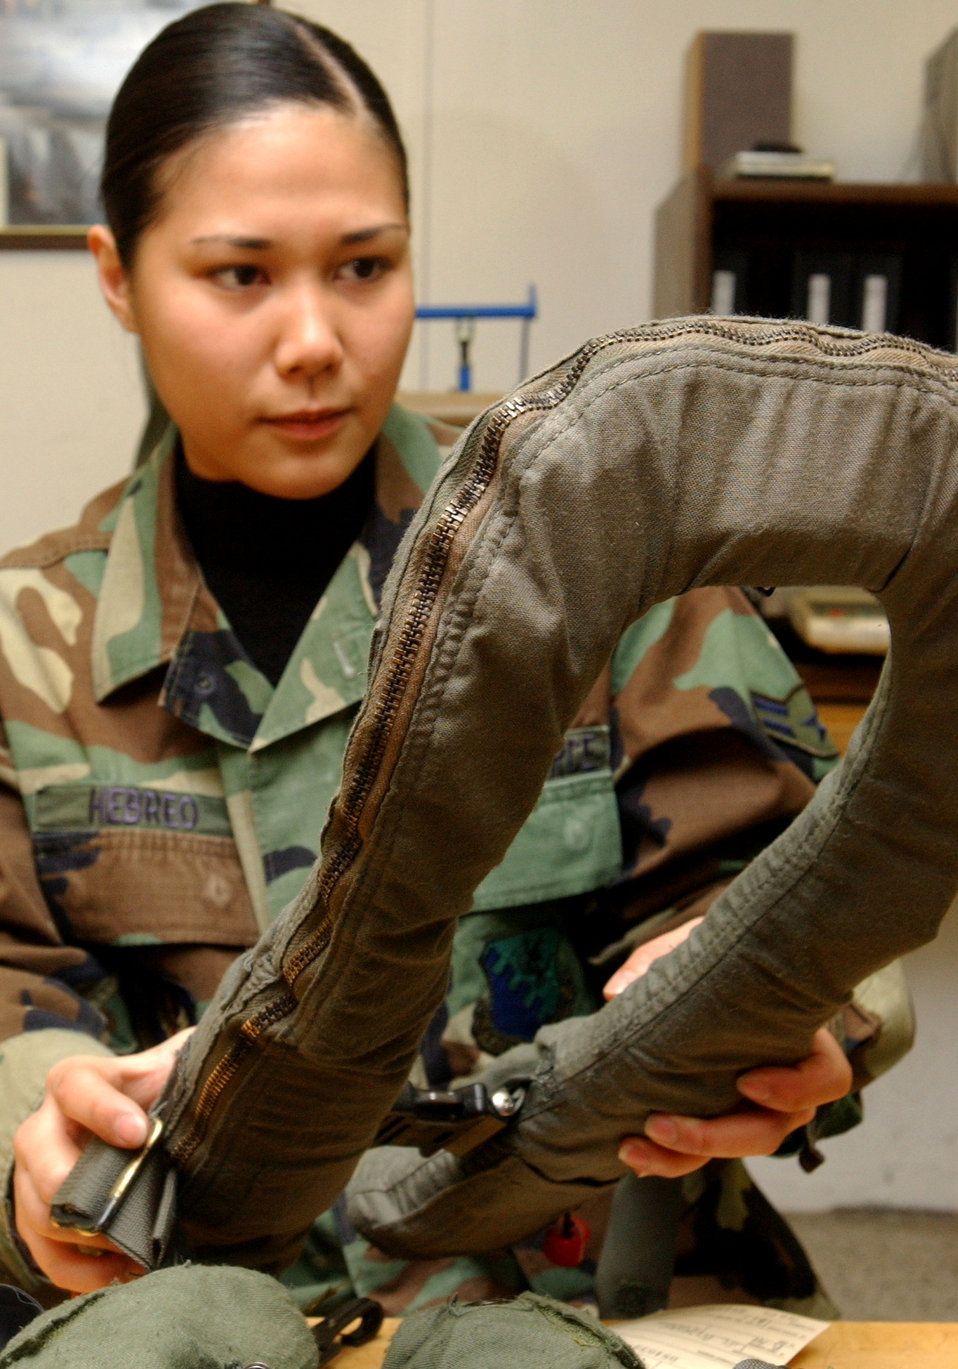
Perserver Inspection

AVIANO AIR BASE, Italy -- Airman 1st Class Marianne Hebreo inspects for imperfections on a 9-P Life Preserver Unit case here March 2. Airman Hebreo is a survival equipment apprentice with the 31st Maintenance Squadron.